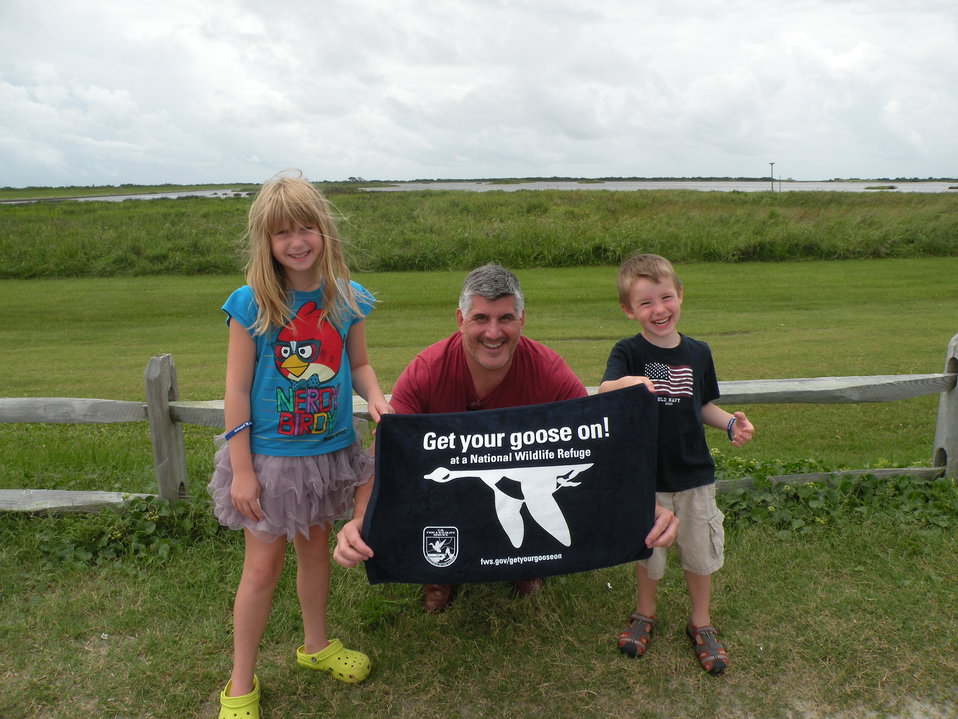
Get Your Goose On!

Visitors at PINWR enjoying the refuge stop to Get Their Goose On!

Ashlyn Knight/USFWS